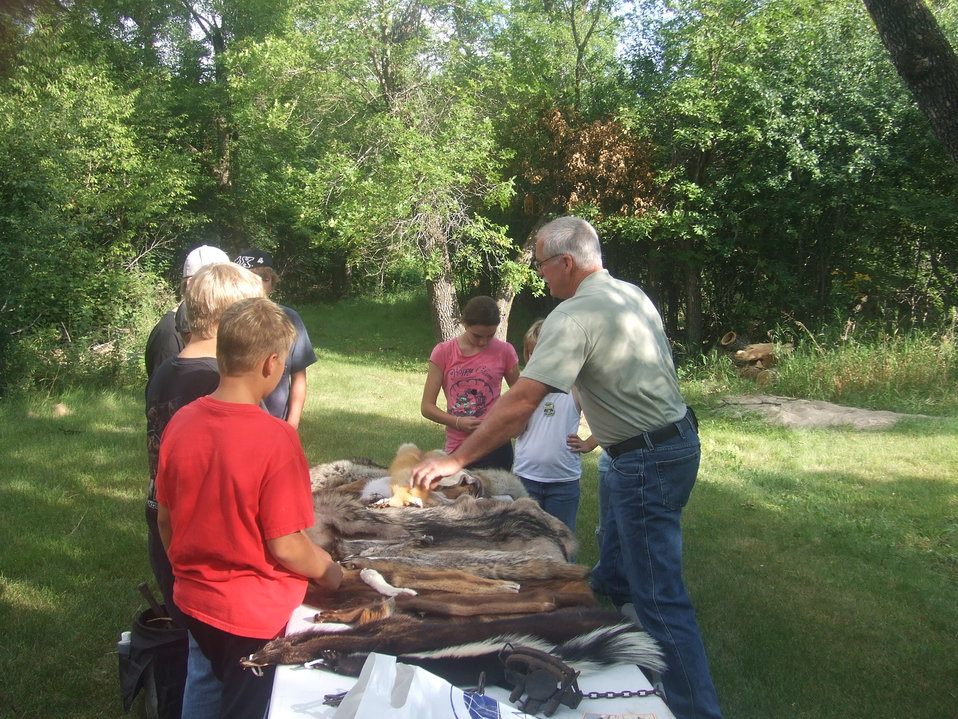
2011 Greenwing Day - Trapping session

Des Lacs National Wildlife Refuge, Tasker's Coulee

USDA/Animal Health and Plant Inspection Service staff educated youth about trapping.